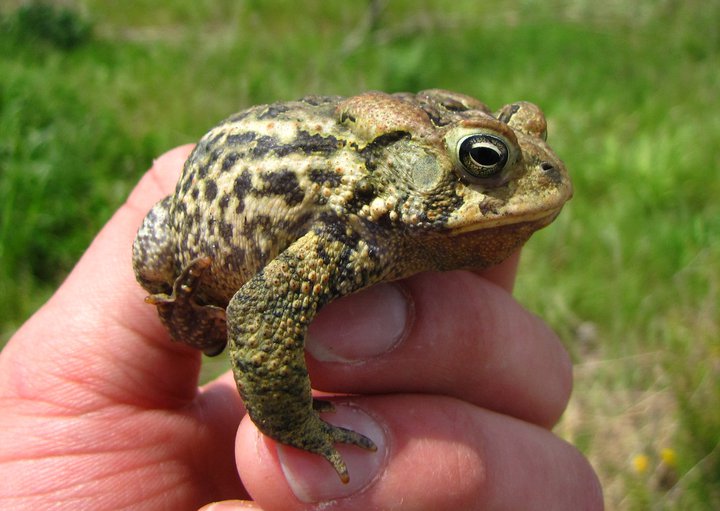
american toad

Port Louisa National Wildlife Refuge